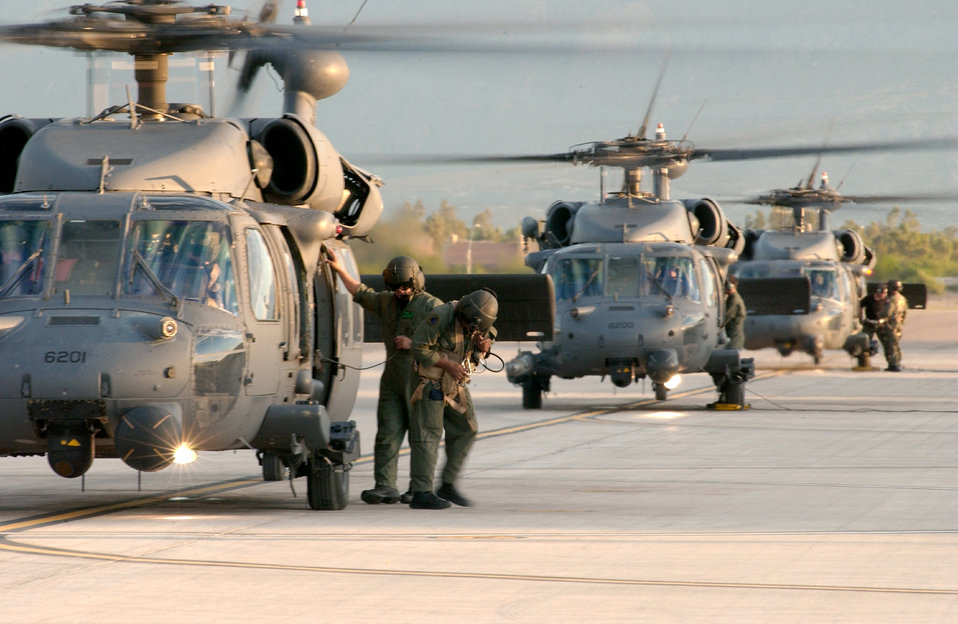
AF helicopter crews rescue 221 hurricane victims

DAVIS-MONTHAN AIR FORCE BASE, Ariz. -- Airmen with the 55th Rescue Squadron here complete last minute preparations before departing to support Hurricane Katrina rescue operations.